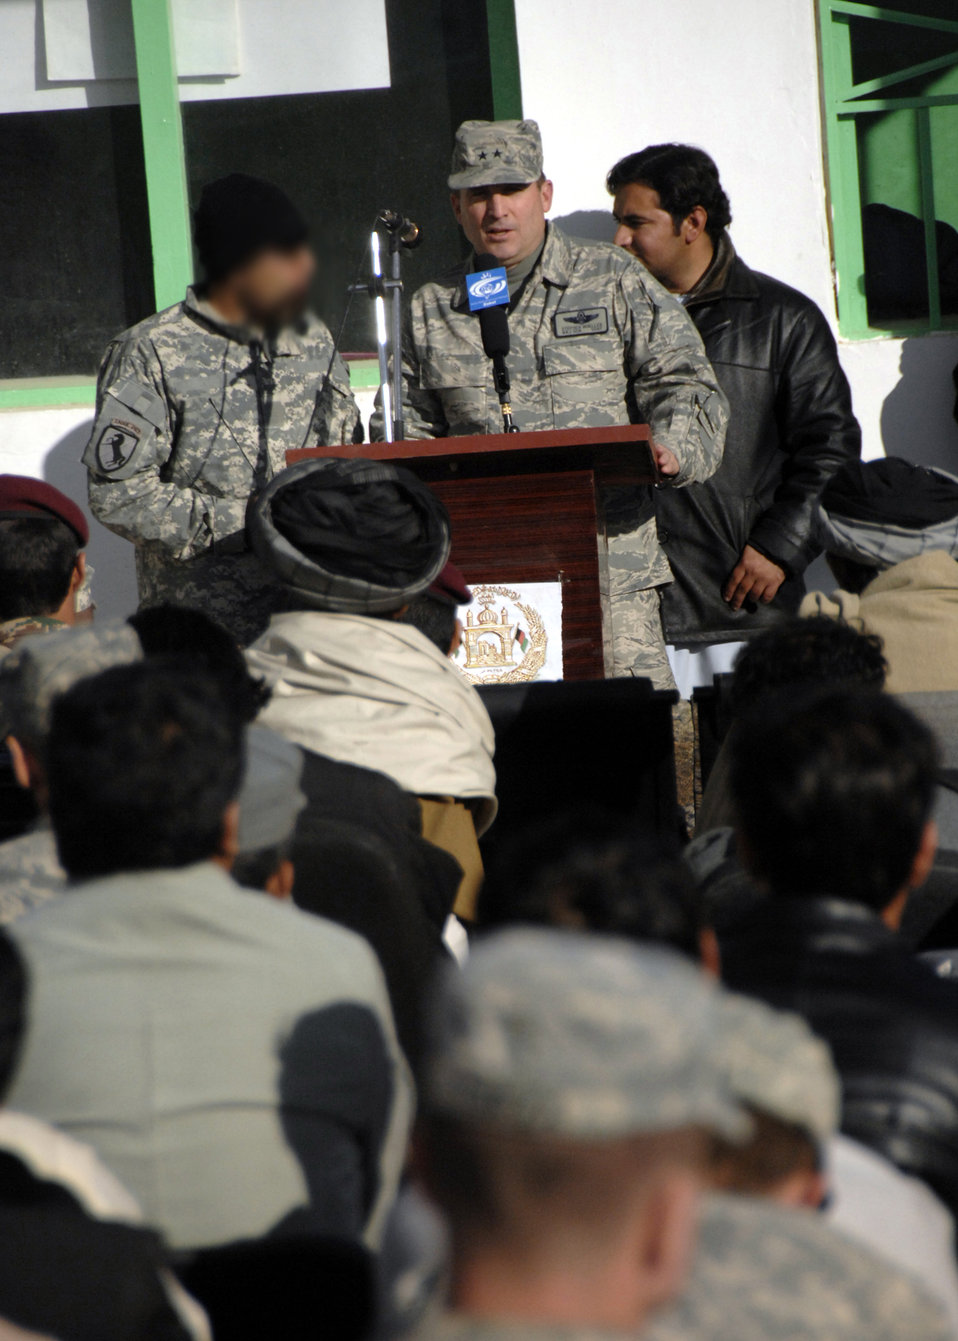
Provincial reconstruction team expands provincial hospital for Afghans

Maj. Gen. Stephen Mueller speaks to local Afghan community members during the cornerstone ceremony for a new, modern wing of the Zabul Provincial Hospital Dec. 26, 2009 in Qalat, Afghanistan. General Mueller is the U.S. Air Forces Central Air Component Coordination Element director.